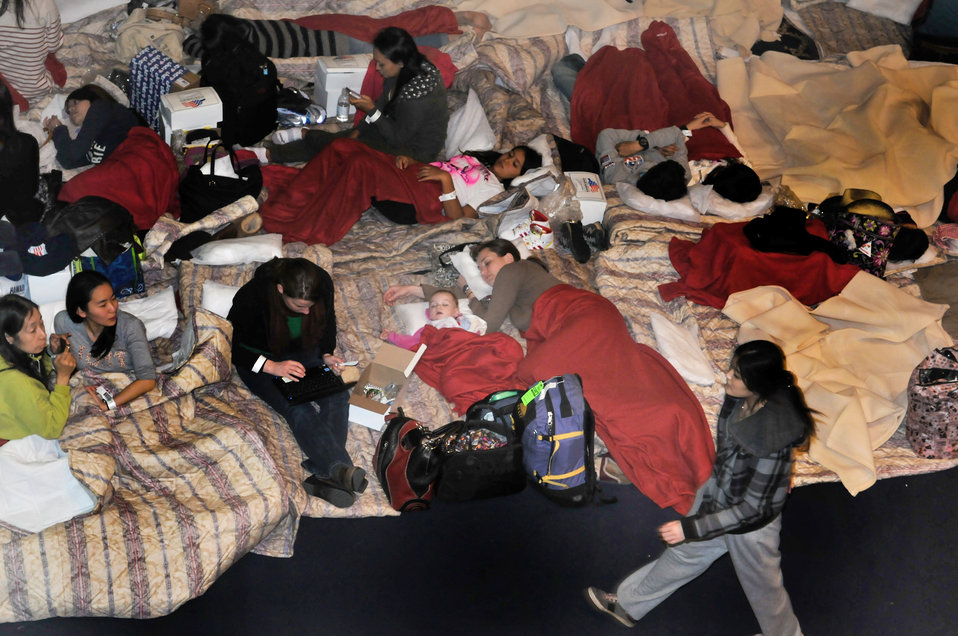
Taking shelter

Passengers of a commercial airline flight take shelter March 11, 2011, at Yokota Air Base, Japan. Base officials there provided food and shelter to passengers of aircraft diverted from Narita International Airport in Tokyo, due to an 8.9-magnitude earthquake.